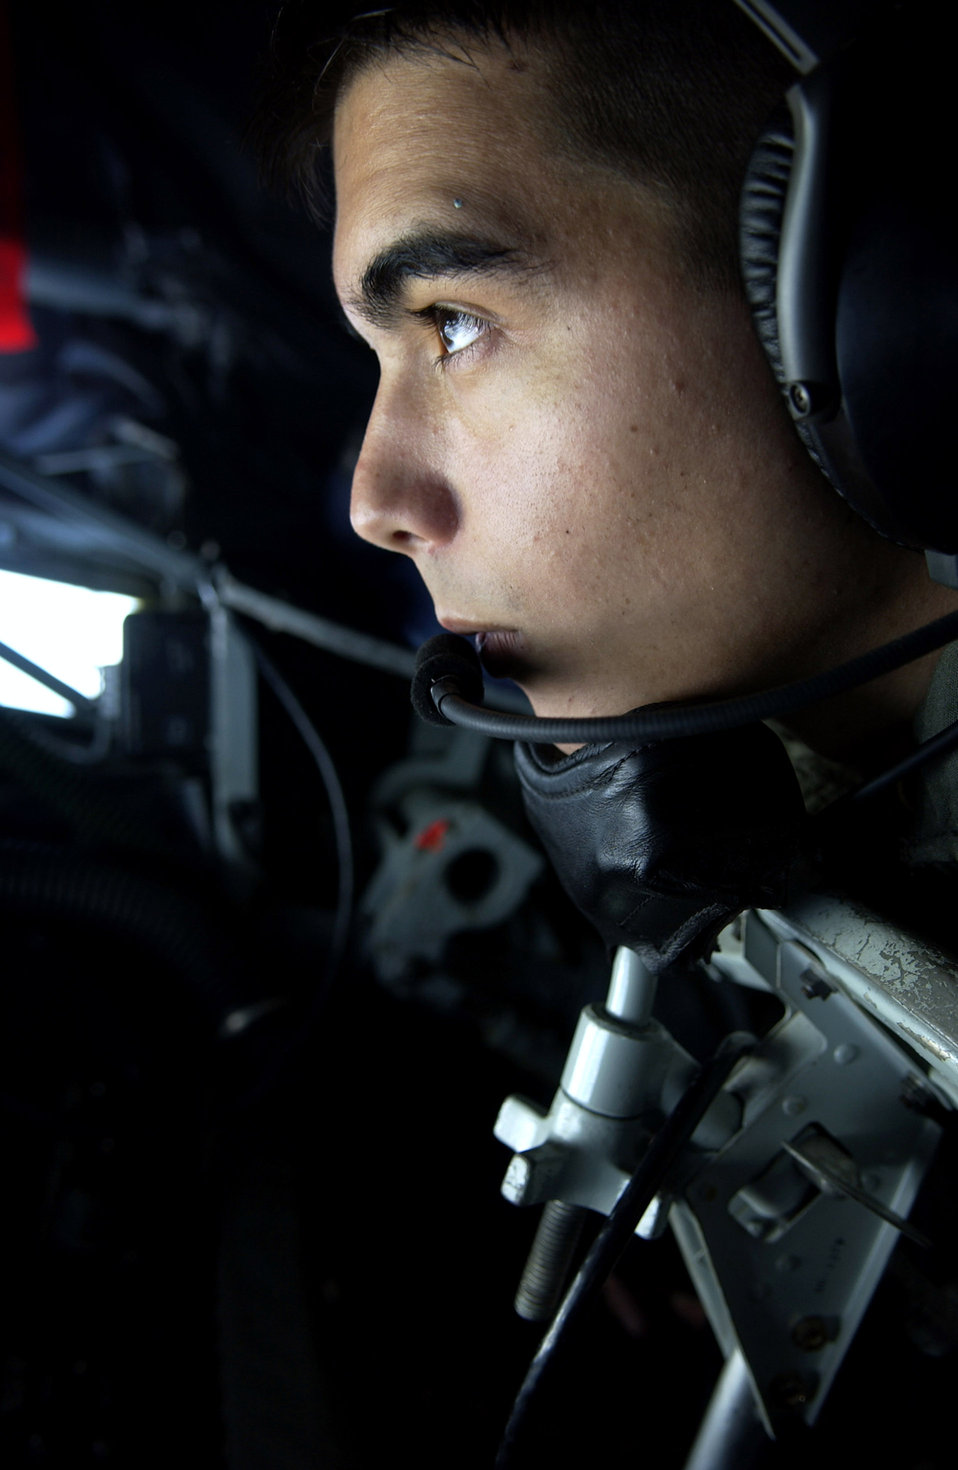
Valiant Shield gas station

Airman 1st Class Geoffry Schultz looks out over the Pacific from a KC-135 Stratotanker during Valiant Shield Aug. 9. During the exercise, Air Force aircraft and Airmen from stateside bases and Kadena Air Base, Japan, will comprise part of an expeditionary air wing based at Andersen Air Force Base, Guam. These forces will participate in integrated joint training with Navy and Coast Guard forces. Airman Schultz is a boom operator with the New Hampshire Air National Guard.